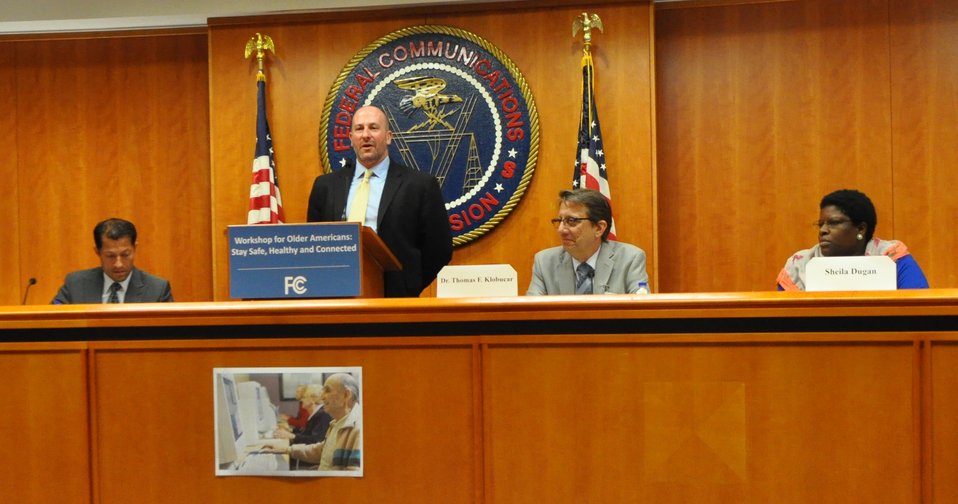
11

Older Americans Workshop Agenda Stay Safe, Stay Healthy, Stay Connected